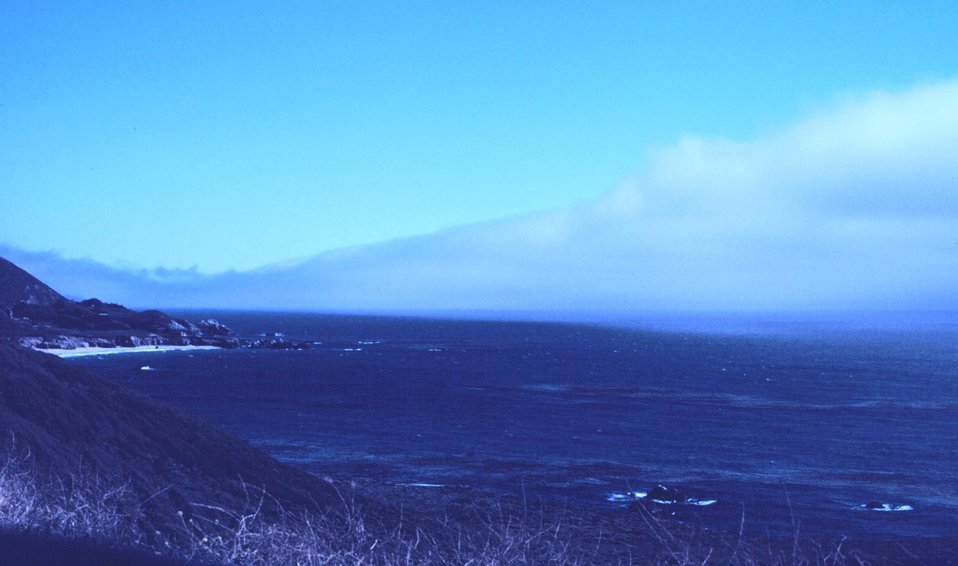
Coastal fog creeping in to the Big Sur coastline